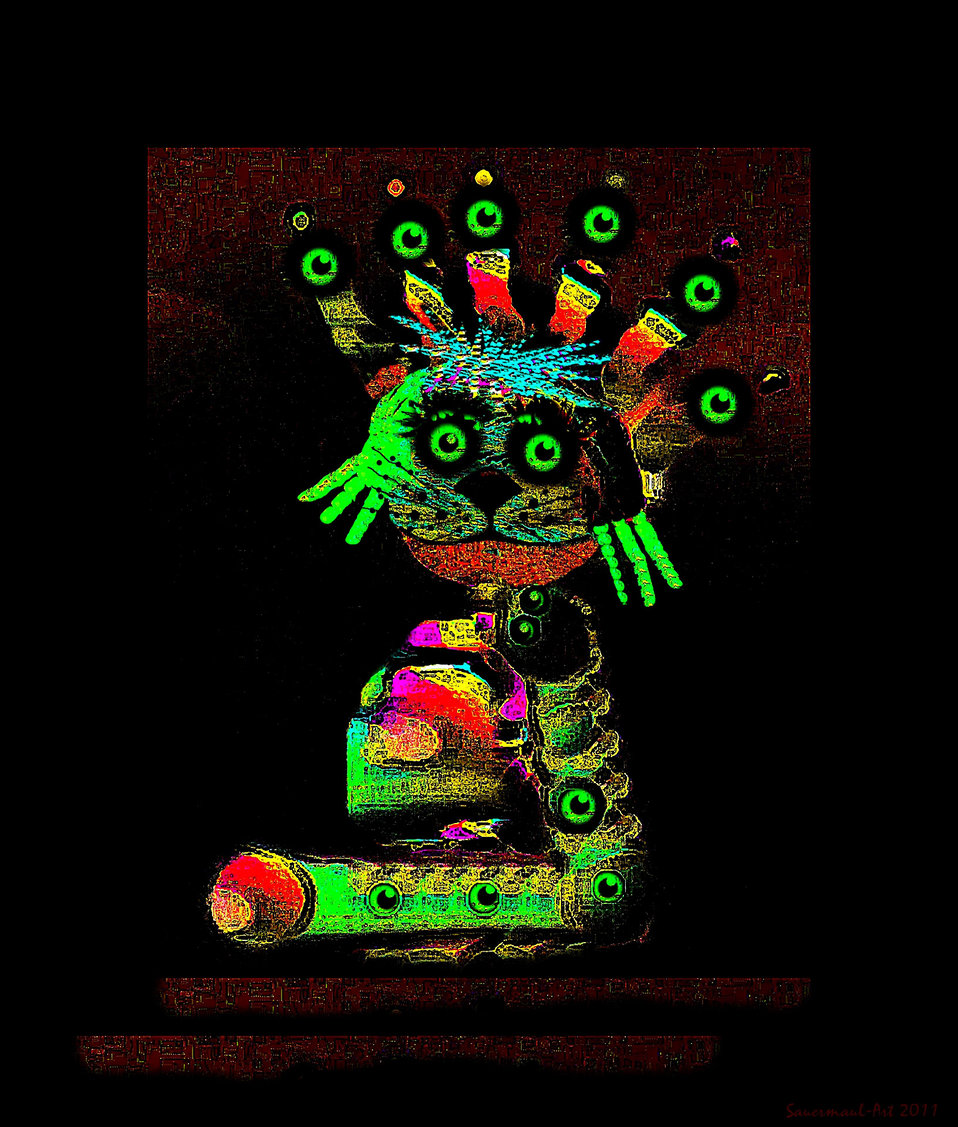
Facet cat

Sauermaul-art. abstract digital painting.